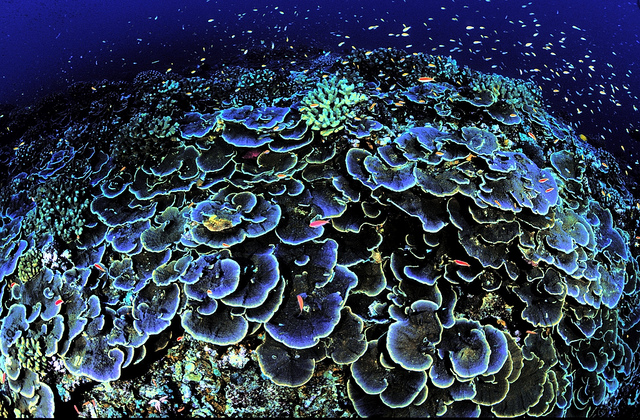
Jarvis Island National Wildlife Refuge, Pacific

The coral Montipora aequituberculata provides shelter for fish at this refuge about 1,300 miles southwest of Honolulu.